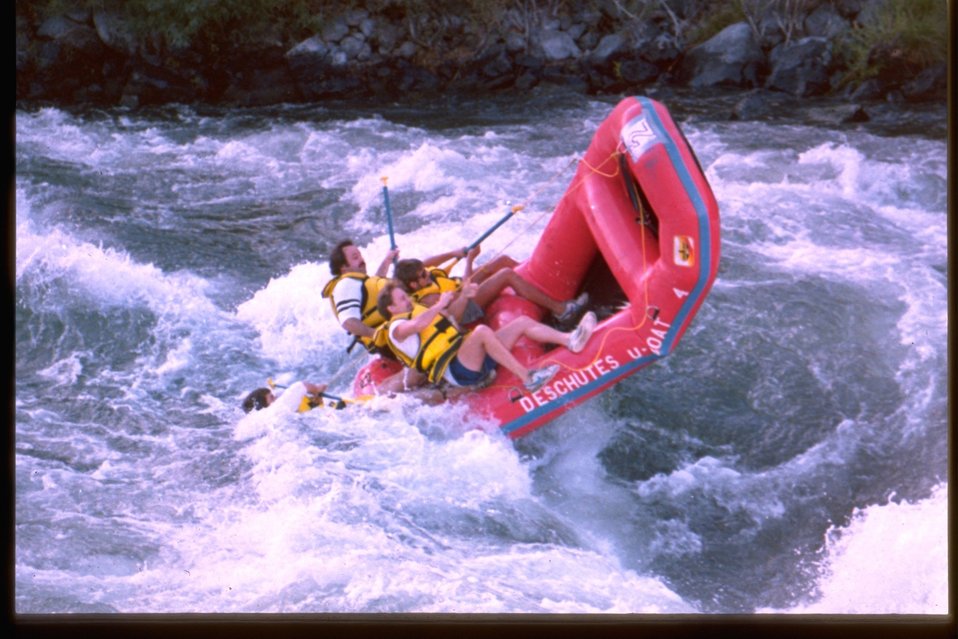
Rafting wipe-out in the Deschutes River.